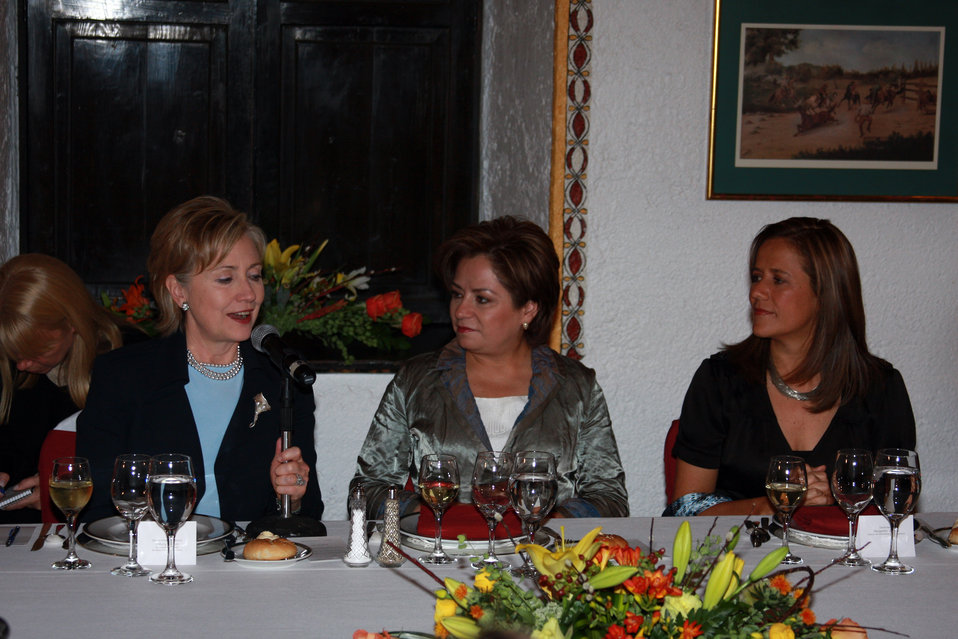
Secretary Clinton Attends Dinner for Women Leaders

U.S. Secretary of State Hillary Rodham Clinton participates in a dinner for women leaders hosted by Secretary of Foreign Affairs Patricia Espinosa (center) and attended by Mexican First Lady Margarita Zavala.(right),Mexico City, March 25, 2009.